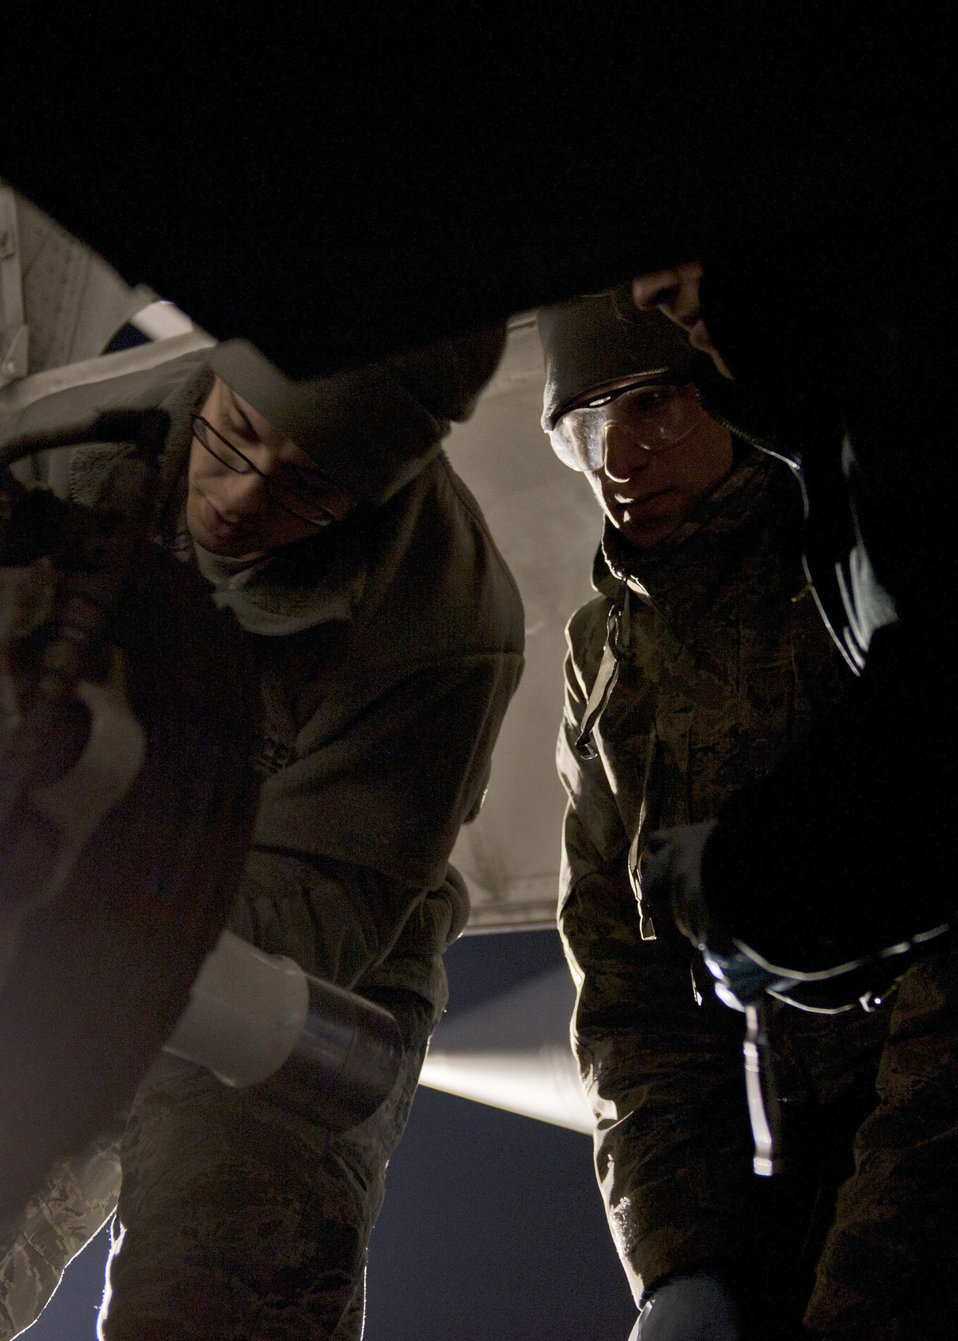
C-130 maintenance

Crew chiefs from the 374th Aircraft Maintenance Squadron perform maintenance on a C-130 Hercules March 31, 2011, at Yokota Air Base, Japan.